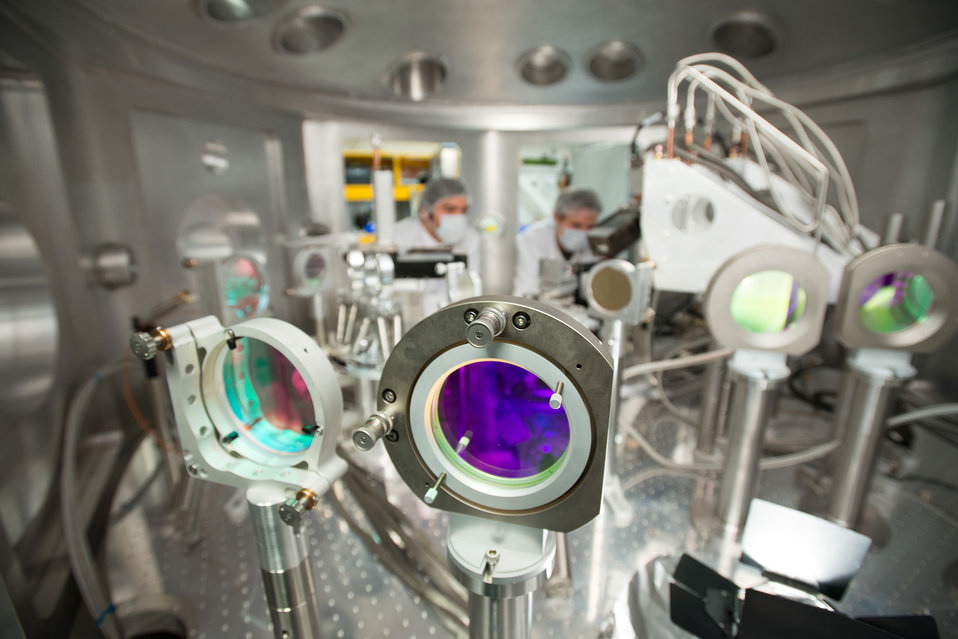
Shown is the Matter in Extreme Conditions (MEC) hutch of SLAC's LCLS Far Experiment Hall.

The (MEC) Matter in Extreme Conditions instrument at SLAC gives scientists the tools to investigate the extremely hot, dense matter at the centers of stars and giant planets. These experiments could help researchers design new materials with enhanced properties and recreate the nuclear fusion process that powers the sun.